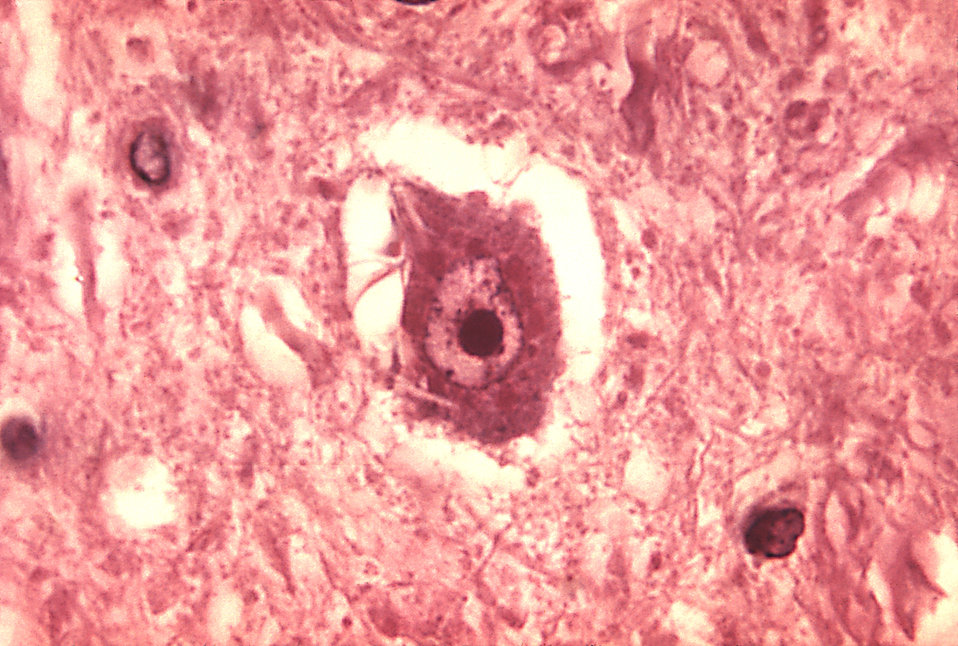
This micrograph depicts the histopathologic changes associated with rabies encephalitis prepared using an H&E stain.